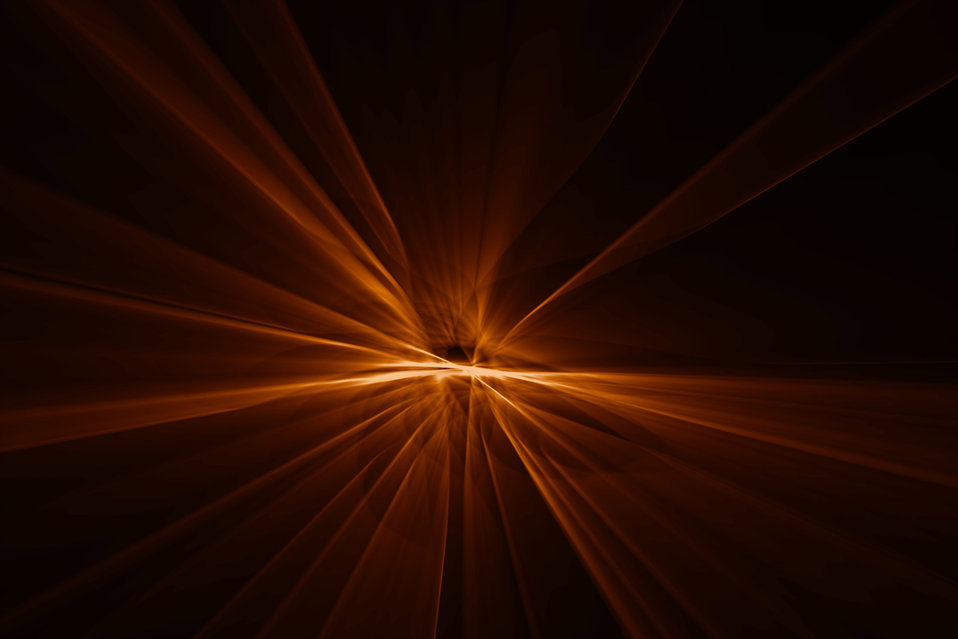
Abstraction background 10

Background on abstraction.